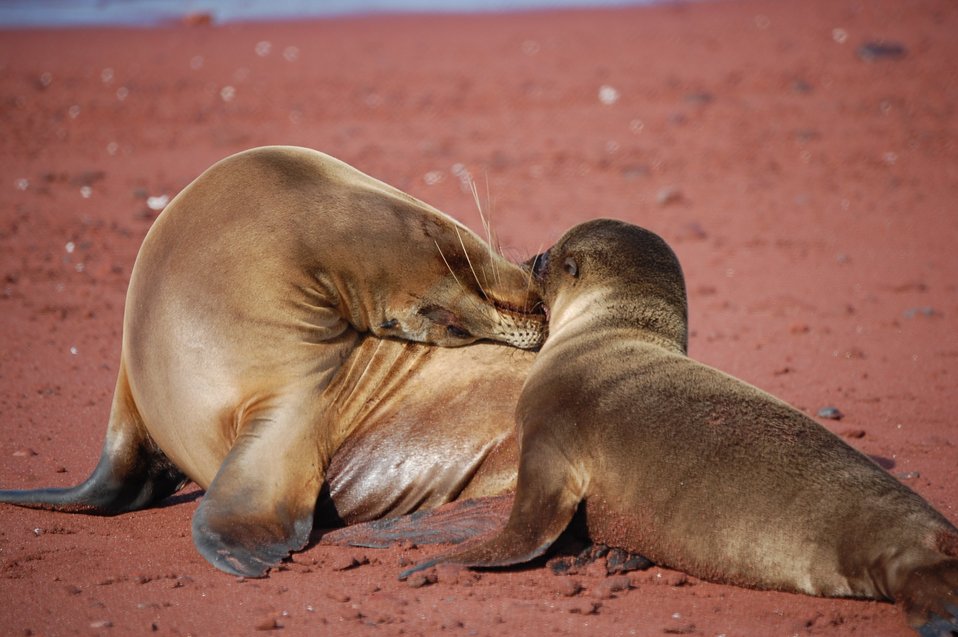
Mother sea lion and pup love - a remarkable display of affection. Photo #5 of sequence.